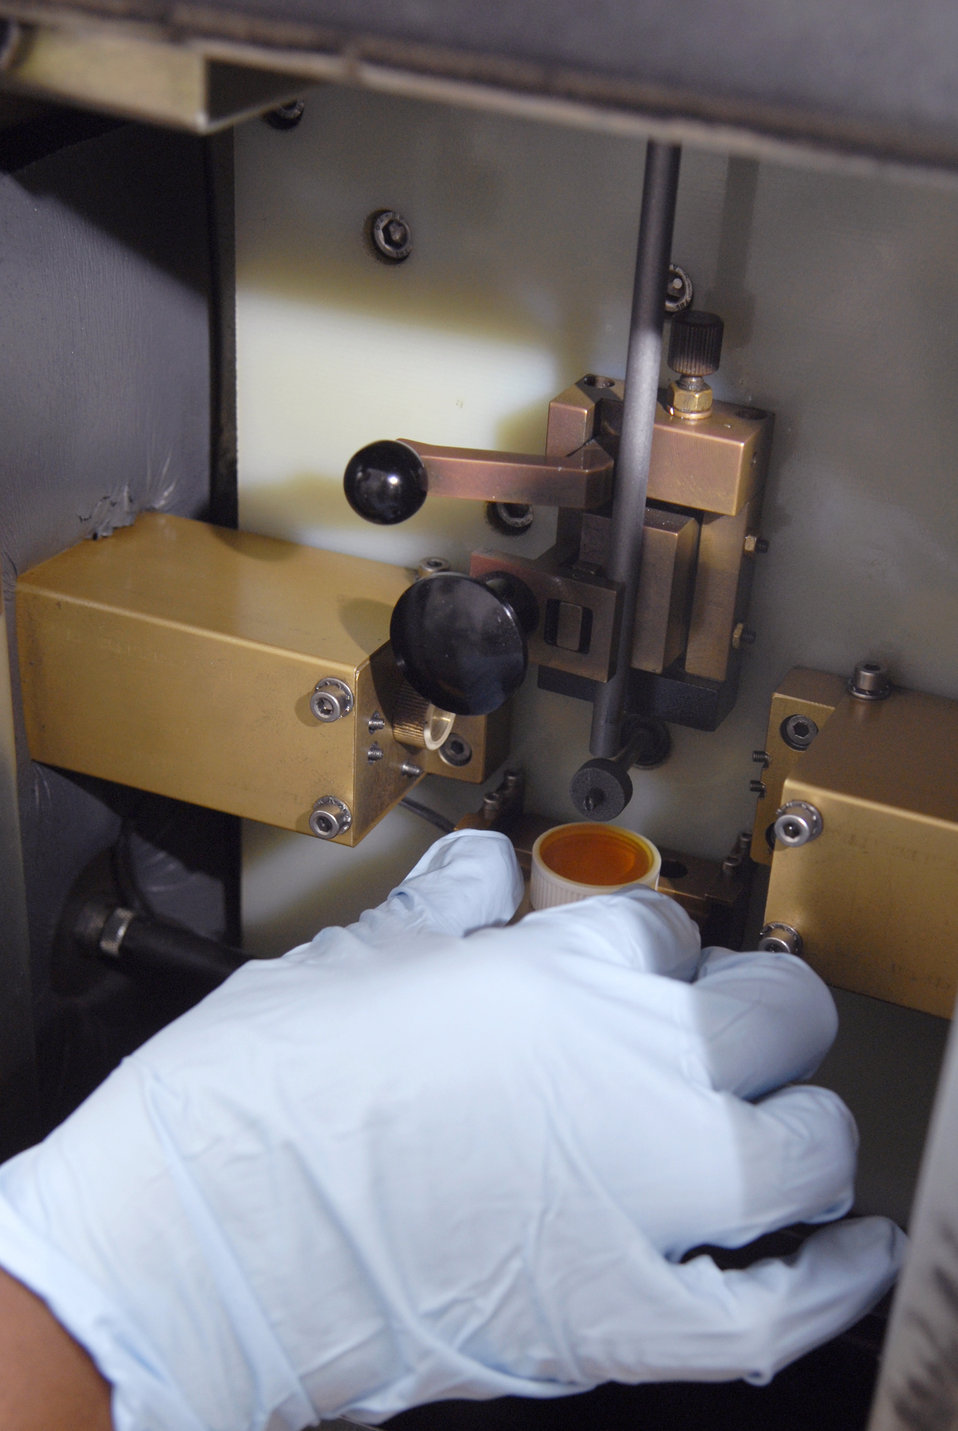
Hunting for hidden damage

Staff Sgt. Josette Francis places a sample of jet engine oil into a spectrometer to check for contaminating elements or metal fragments which could cause engine damage May 14 at an air base in Southwest Asia. Sergeant Francis is an inspector with 379th Expeditionary Maintenance Squadron's non-destructive inspection, and is deployed from Aviano Air Base, Italy.